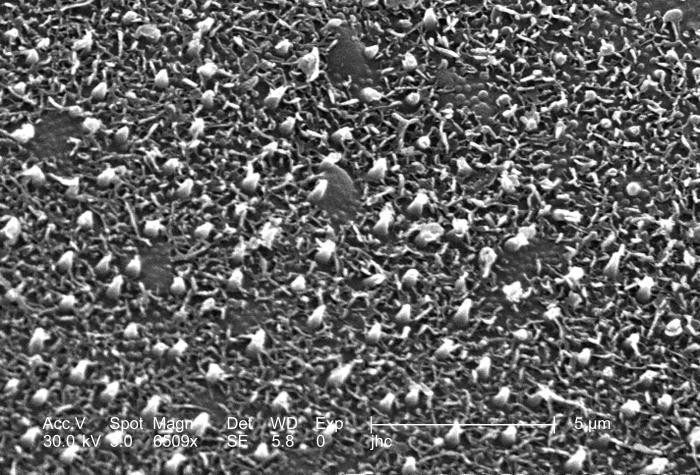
At a high magnification of 6509x, this scanning electron micrograph (SEM) revealed the highly textured exoskeletal surface of an unidentified green bug, found deceased on the grounds in the suburbs of Decatur, Georgia, attached to a deceased, unidentified caterpillar. The exoskeleton on insects is commonly adorned by a myriad of protuberances, some of which are to allow its owner to attract a mate, others to detect changes in its environment, and still others to act as protective mechanisms by which the organism can thwart a foe, or avoid being eaten by a predator.